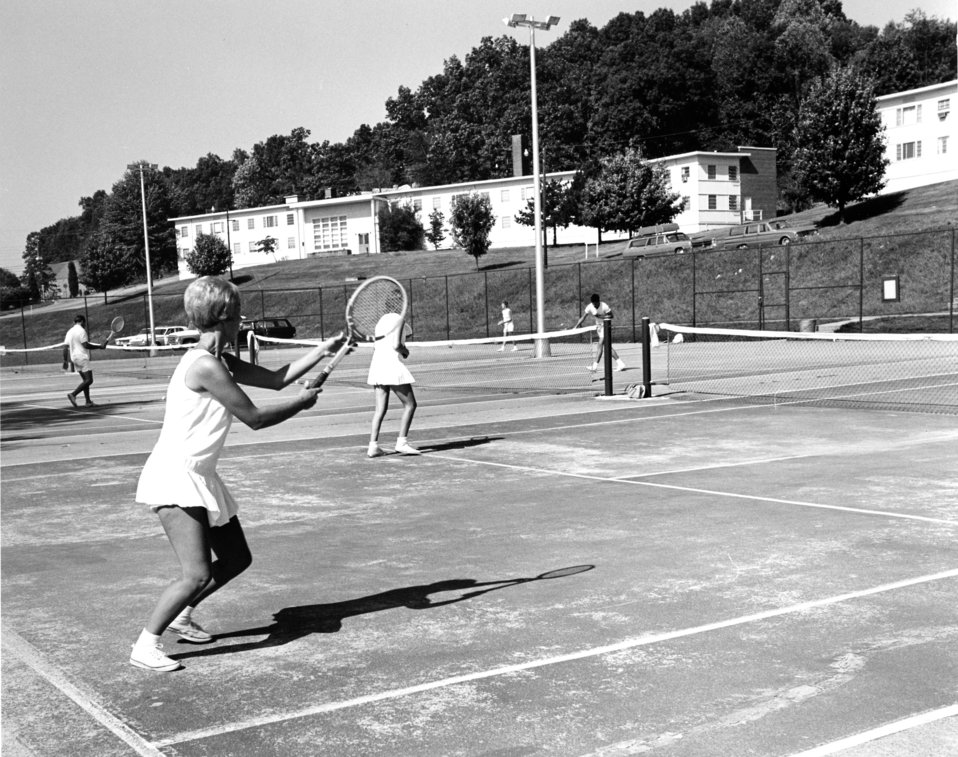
Playing Tennis Oak Ridge 1968

68-0461-3 DOE photo Frank Hoffman 9-16-1968 Oak Ridge Tennessee